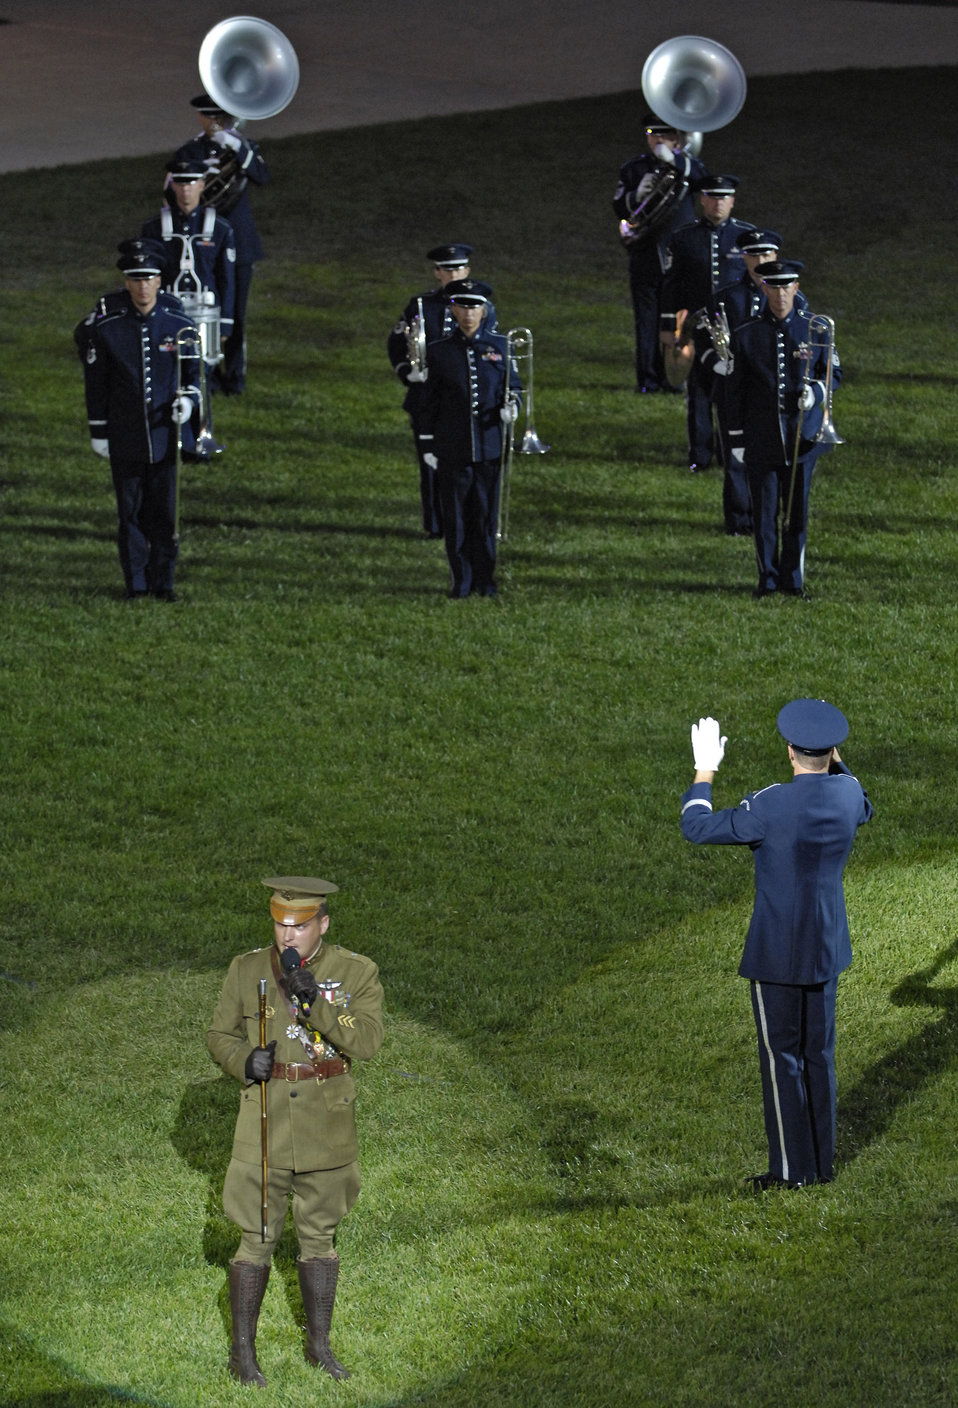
Air Force Tattoo

Air Force Band members perform on the Ceremonial Lawn during the Air Force Tattoo Sept. 23 at Bolling Air Force Base, D.C. The 2007 Air Force Tattoo, titled